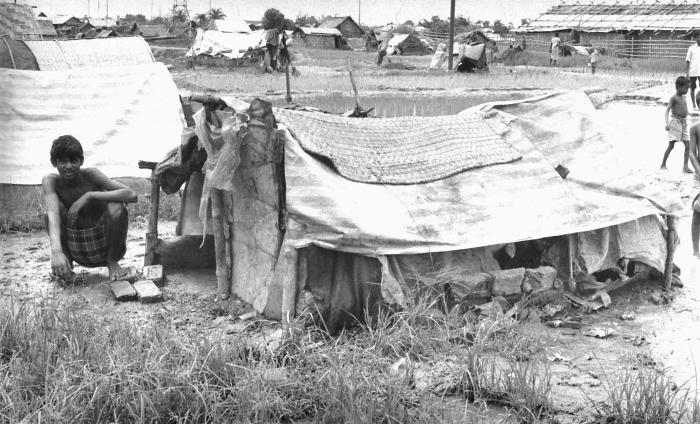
This young man was photographed outside his temporary house, the likes of which was common due to the transient 'floating' population during the early 1970s. This image was part of a series provided by Dr. Stan Foster, and captured by Pierre Claquin, M.D., B.A.C., who at the time was a member of the World Health Organization's Smallpox Eradication Program. It was part of a series photographed by former E.I.S. officer, Stanley O. Foster M.D., M.P.H., and was one of a series entitled 'The Story of One Smallpox Jeep', which depicted the travails faced by the jeep, and its occupants of public health practitioners, as they road through the Bangladesh countryside in an attempt to eradicate smallpox from the country.